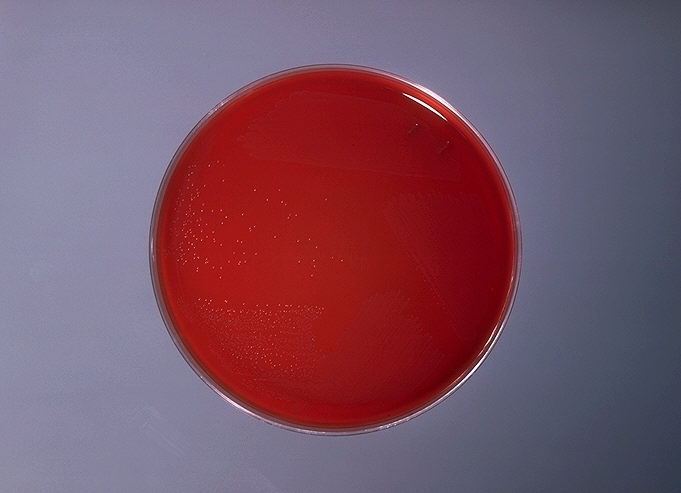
Blood agar plate culture of Corynebacterium diphtheriae (intermedius).